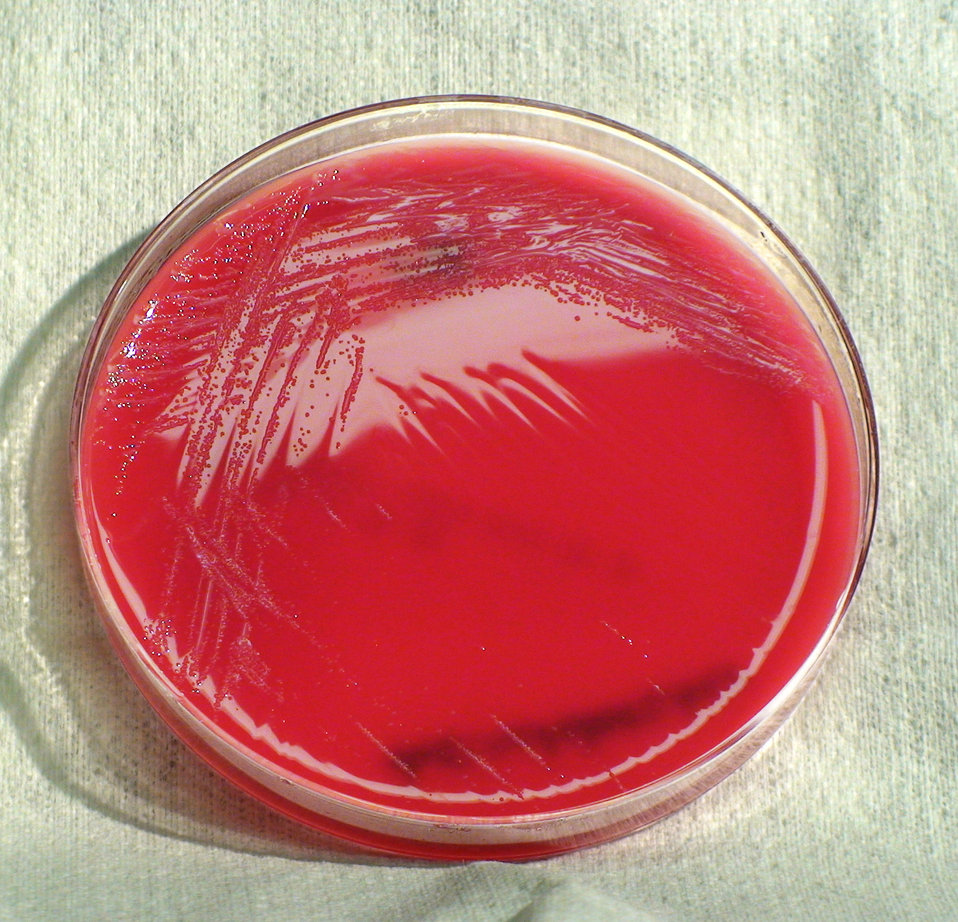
This photograph depicts light colonial growth displayed by an unknown Gram-negative Acinetobacter sp. bacteria, which was grown on a medium of sheep's blood agar (SBA), for a 24 hour time period, at a temperature of 37�C. See PHIL 12376, for a closer view of these bacterial colonies.